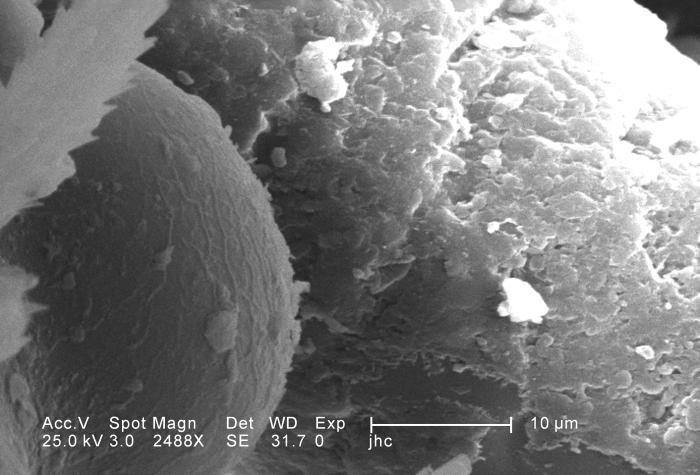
Under a magnification of 2488X, this scanning electron micrograph (SEM) depicted some of the ultrastructural morphology displayed on the head region of a larval antlion, surrounding the region of its right compound eye. This larva is sometimes referred to as a 'doodlebug', because of the trails it leaves in the soft sand as it hunts for prey. This arthropod, i.e., jointed legs, undergoes dramatic morphologic changes when it metamorphoses into a beautiful flying antlion lacewing. Note the particulate debris dispersed over the exoskeletal surface, which represents sand, and other constituents of the antlion's natural environment. See PHIL 11812 through 11817 for additional views of the eye under successively greater madnifications.